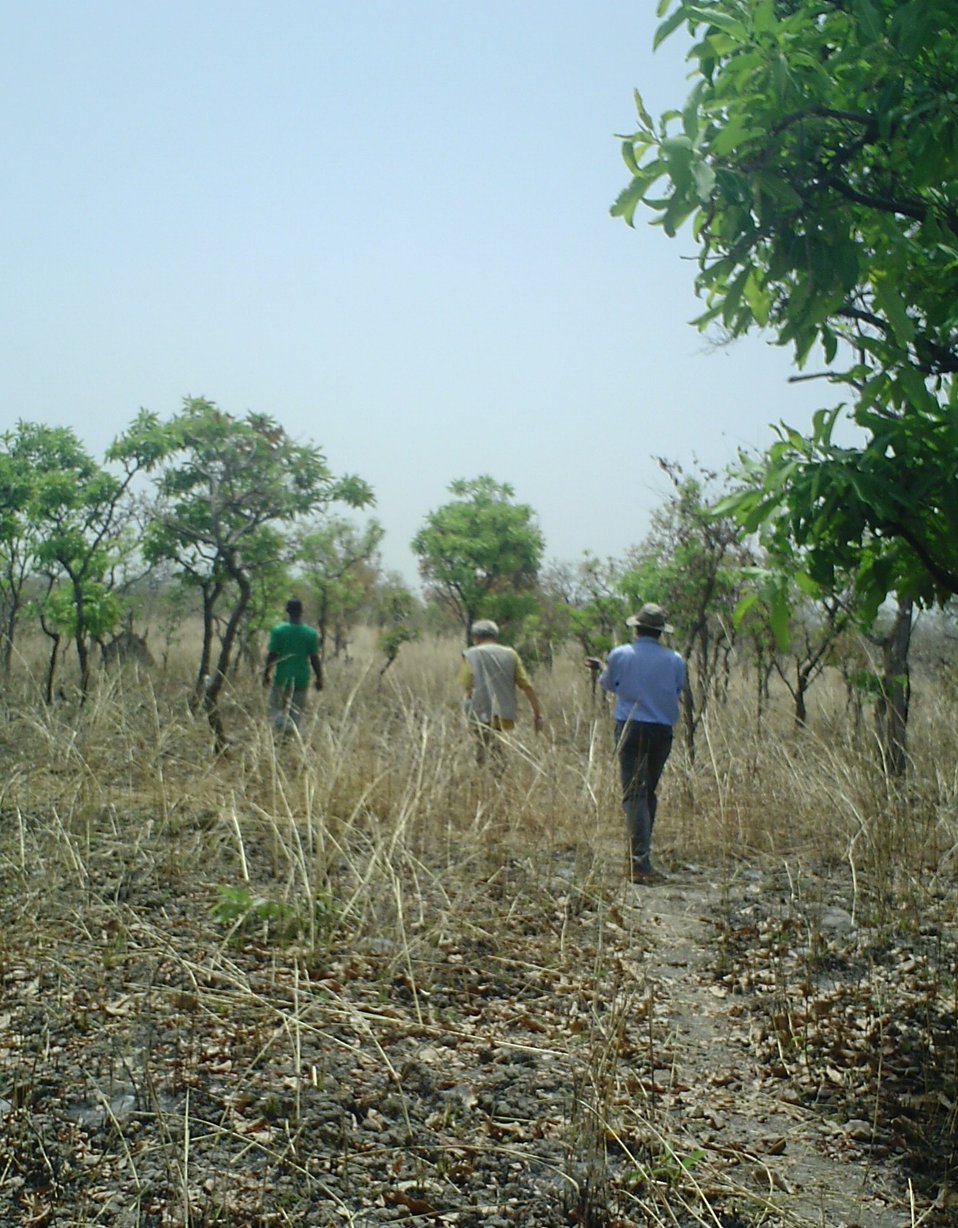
Bouba Njida

Bouba Ndjida in Cameroon, location of elephant slaughter. A team of conservationists goes to survey the poaching crisis.